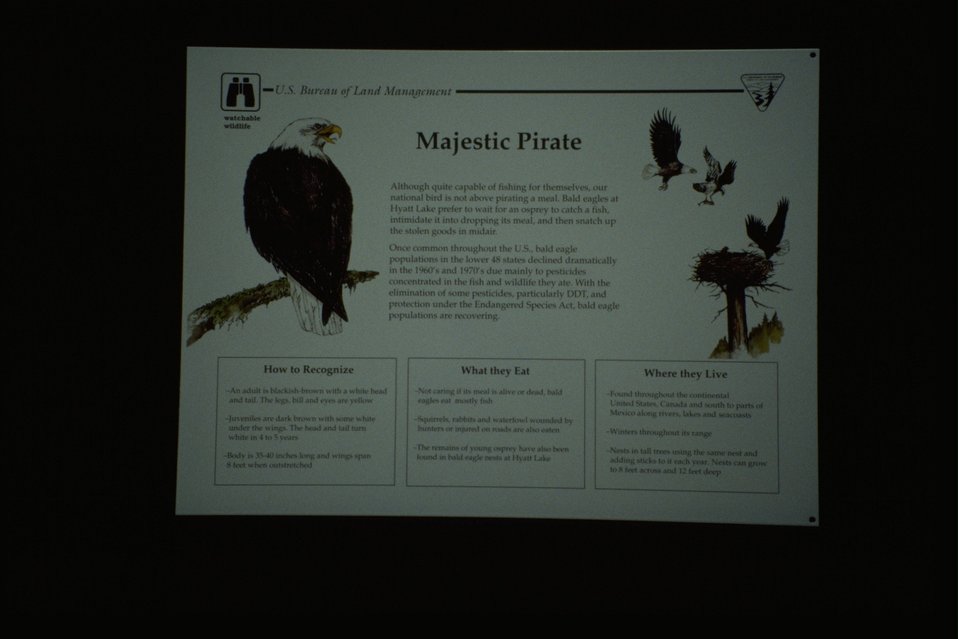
Watchable Wildlife panel from Hyatt Lake.